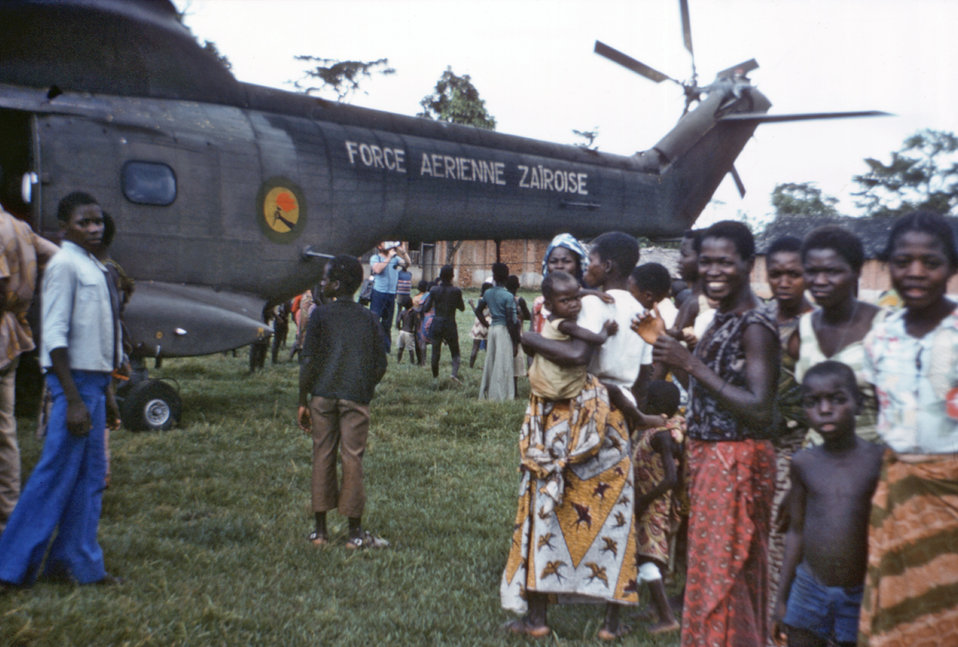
This Zaire Air Force, Puma helicopter was used during the country's 1976 Ebola outbreak, in order to move people and supplies to strategic locations.